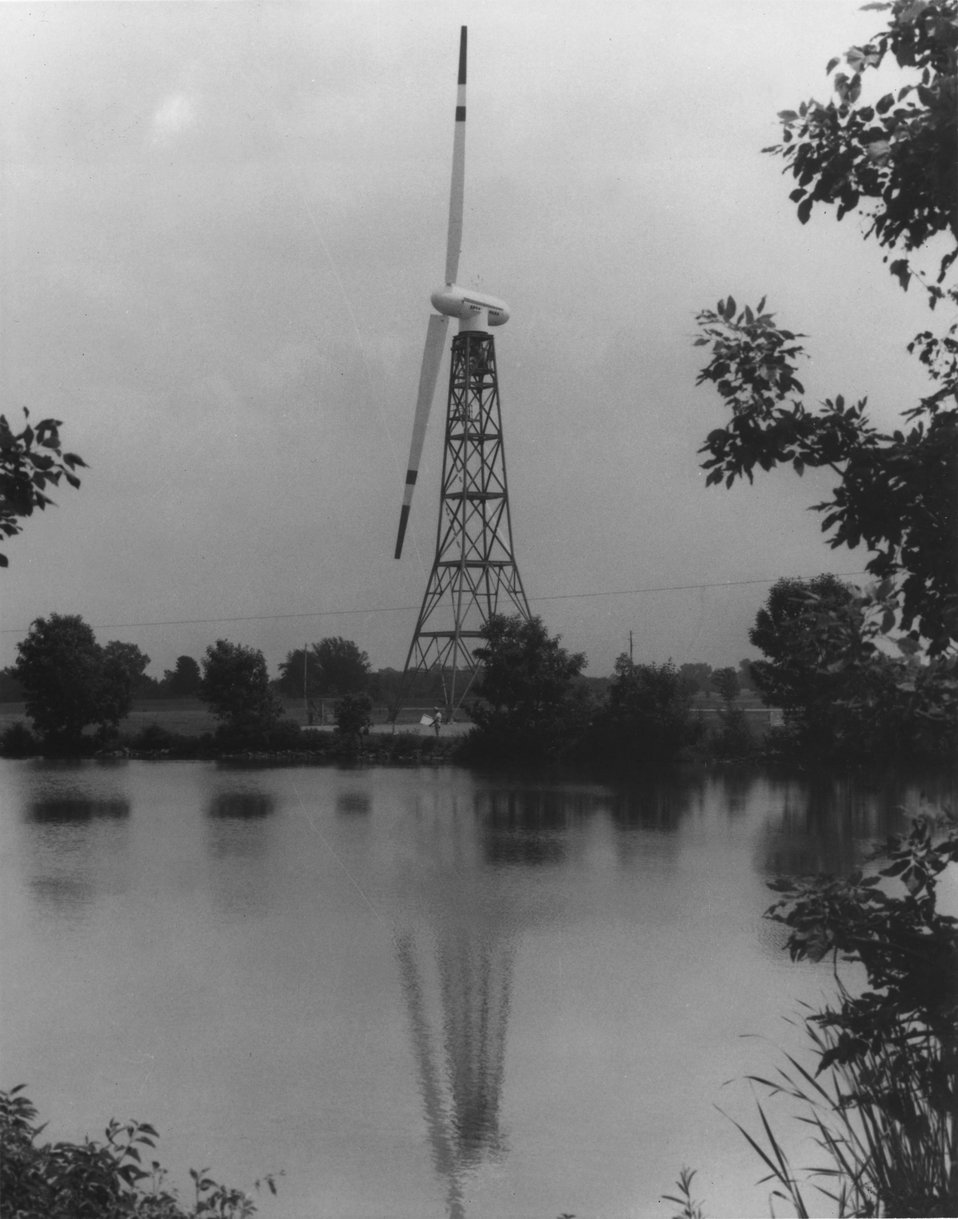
A 125-foot-tall windmill has been developed for the U.S. Department of Energy (DOE) by NASA's Lewis Research Center in Cleveland, Ohio. c. 1975